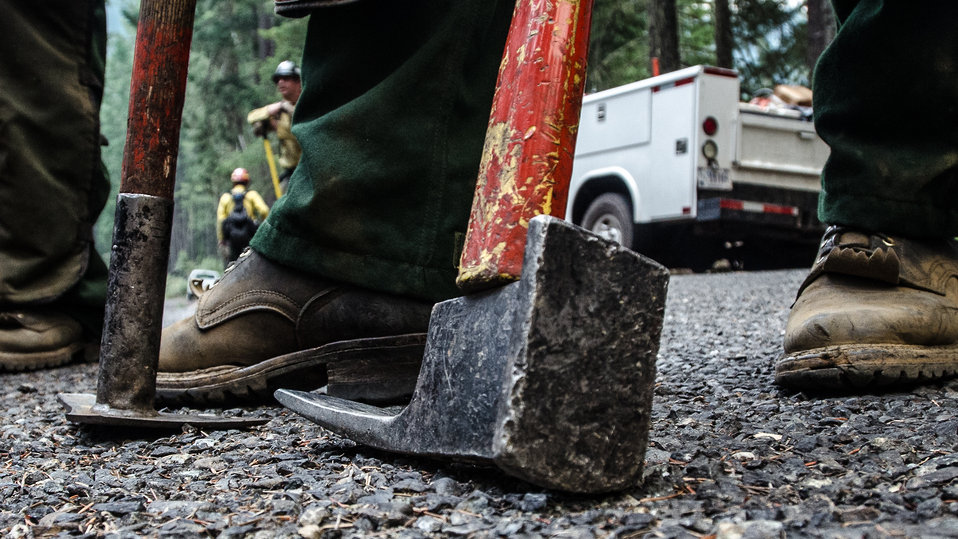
Geronimo Interagency Hotshot Crew from the Department of the Interior (DOI) Indian Affairs (IA) Bureau of Indian Affairs (BIA) San Carlos Agency in Arizona; on assignment at the Big Windy Complex Wildlands Fire, approximately 15 miles west of Interstate-5 and East Northeast of Galice, Oregon, conducts a prescribed burn 'burnout' operation to help stop the main fire that may head toward this roadway, on Friday, Aug 9, 2013. The primary mission of the Interagency Hotshot Crews (IHC) is to provide a safe, organized, mobile and highly skilled hand crew for all phases of wildland fire suppression. The arduous duties and specialized assignments required of IHC personnel require uniform staffing, certification, training, equipment, communications, transportation, organization, and qualifications that adhere to interagency standards and guidelines.